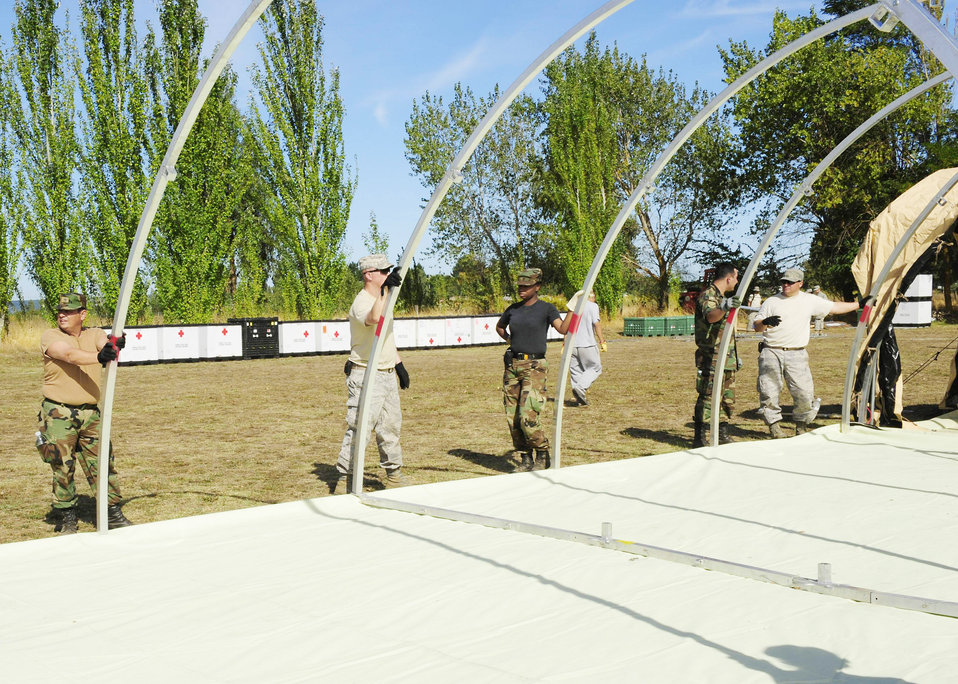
Airmen build hospital in Chile

Airmen from an Air Force Expeditionary Medical Support team along with members of the Chilean army build a mobile hospital March 10, 2010, in Angol, Chile. About 60 medical Airmen will work alongside local Chilean medics to provide medical support to the local community.